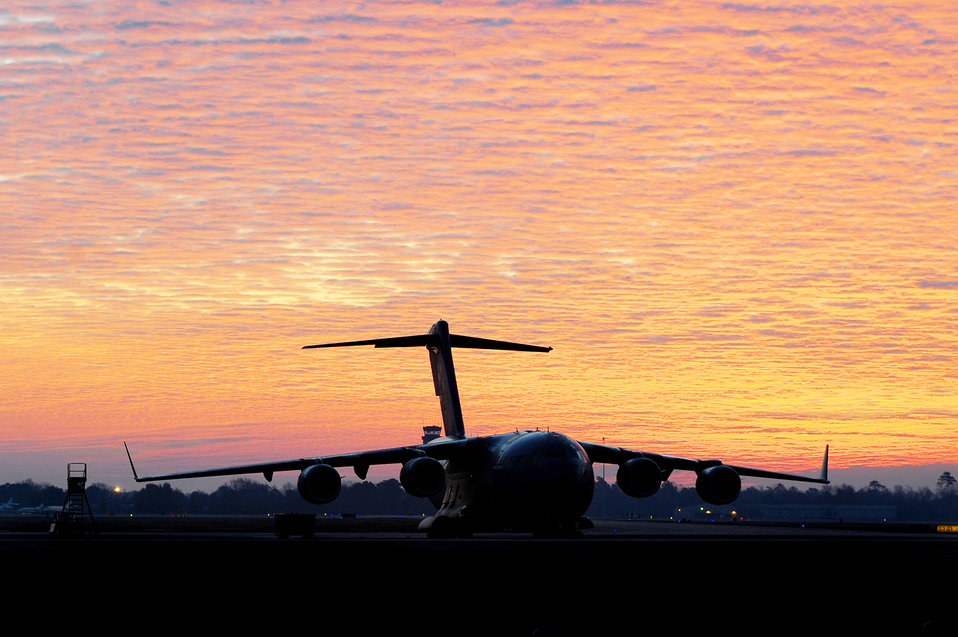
Charleston crew flies evaluation mission

A C-17 Globemaster III sits on the parking ramp at Joint Base Charleston, S.C., during a sunrise Feb. 4, 2010, before an evaluation flight.